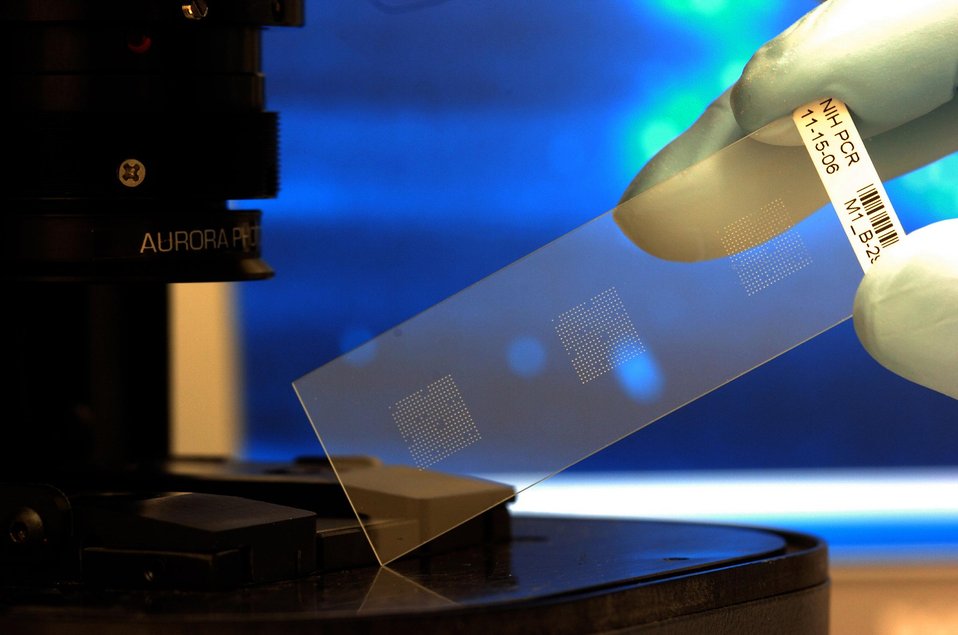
Shown is a biochip slide, which has hundreds to thousands of gel drops on a glass, plastic or membrane support at Argonne National Laboratory.

The biochip system may one day become a standard diagnostic tool for identifying human and veterinary infectious diseases. It can identify infectious disease strains in less than 15 minutes when testing protein arrays and in less than two hours when testing nucleic acid arrays. The system can be used in hospitals and other labs as well as in the field. Each biochip has hundreds to thousands of gel drops, each about 100 microns in diameter -100 microns is about the width of an average human hair.